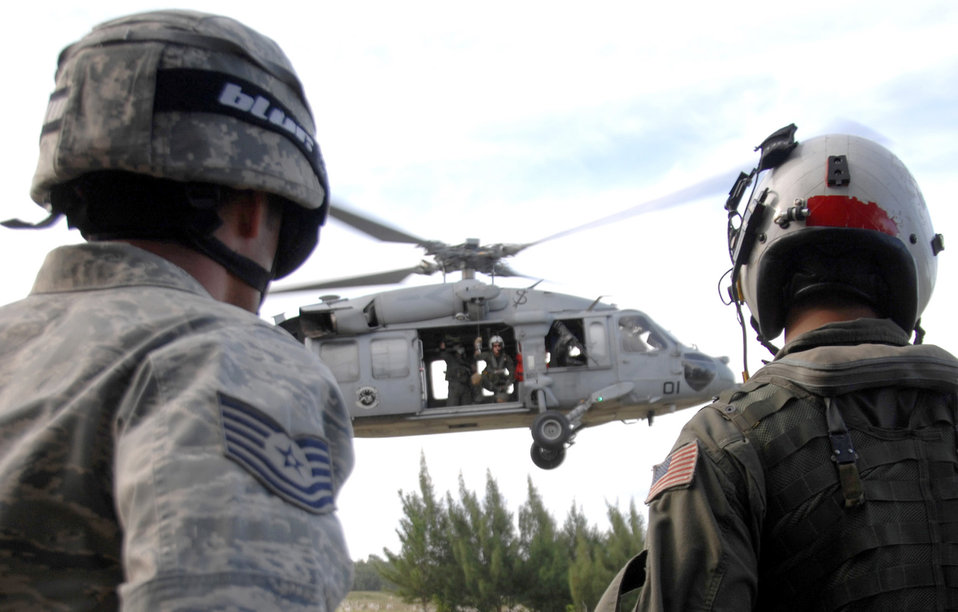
Airmen, Sailors train together for future relief efforts

Servicemembers assigned to the 36th Mobility Response Squadron and HSC-25 conduct medical evacuation training Oct. 13, 2010, at Northwest Field, Guam. The joint field training exercise was performed in an effort to interchange and familiarize themselves with each other's tactics, techniques and procedures to be able to interoperate and conduct joint humanitarian assistance/disaster relief missions in the Pacific region.